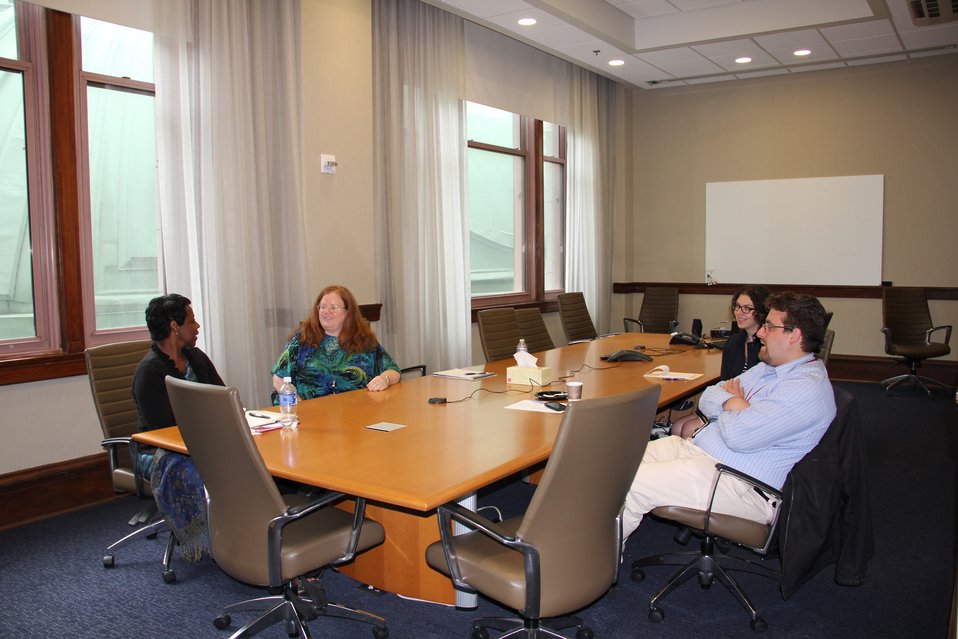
Maria Marable, Lisa Royse, Sara Davis, and Christopher Zarr meet on June 9, 2014; Location: National Archives at New York City, New York, New York